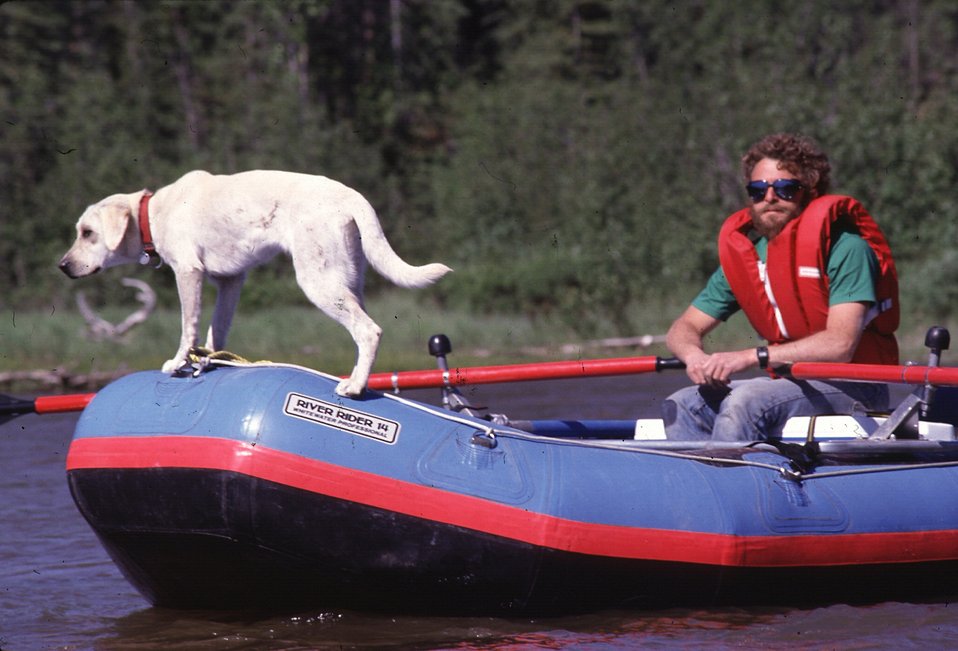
Dog on raft, Gulkana NWSR